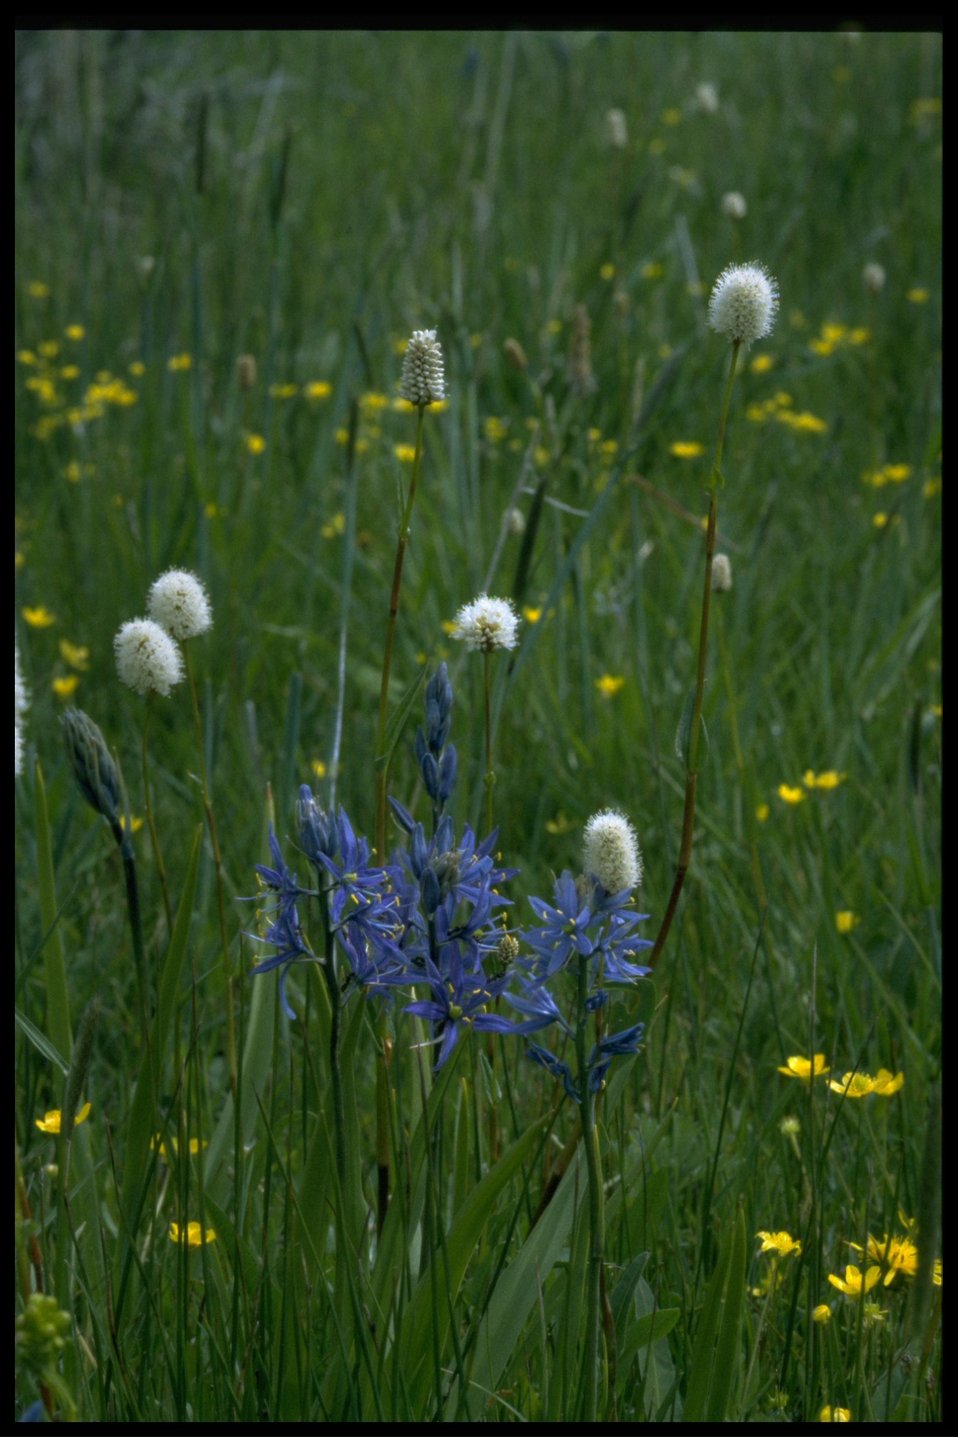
Farshot of small camas (Camassia quamash).